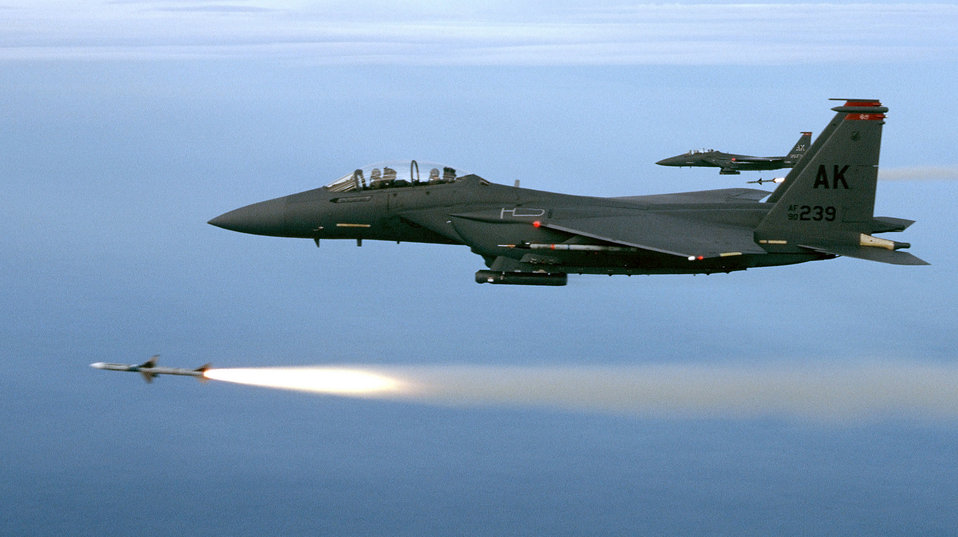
Training mission

OVER THE GULF OF MEXICO -- Two F-15E from the 90th Fighter Squadron, Elmendorf Air Force Base, Alaska, fire a pair of AIM-7Ms during a training mission. The mission took place over the Gulf of Mexico just off the coast of Florida.